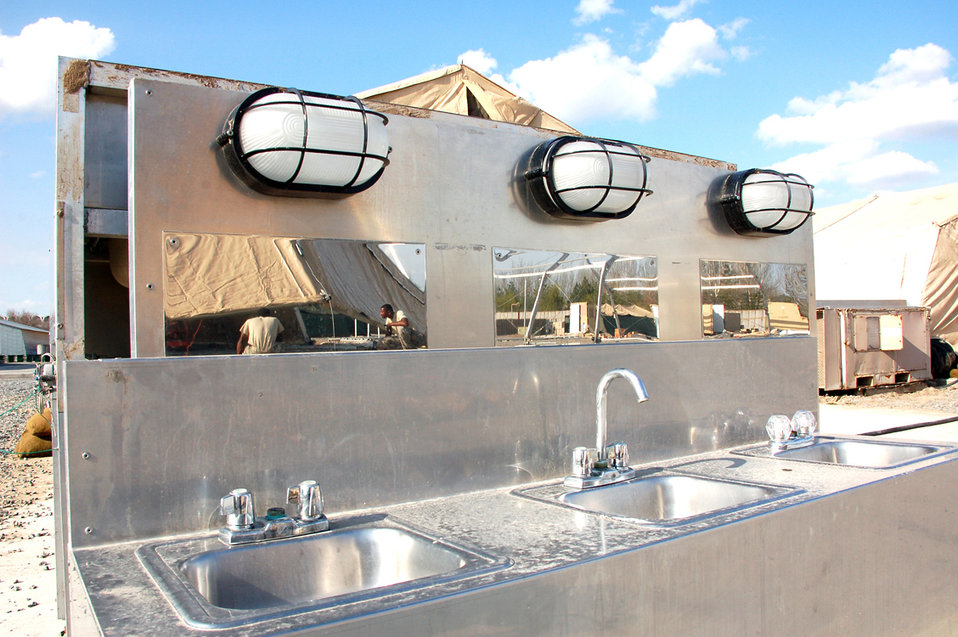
BEAR builds new quarters for forces at Manas

Members of a Basic Expeditionary Airfield Resources team deployed to Southwest Asia are reflected in the mirrors of a sink unit awaiting installation in new washroom facilities March 30 at Manas Air Base, Kyrgyzstan. Construction of new lodging structures is ongoing in preparations for the increased number of coalition personnel transiting through Manas to and from Afghanistan. The BEAR Airmen are deployed from Holloman Air Force Base, N.M.